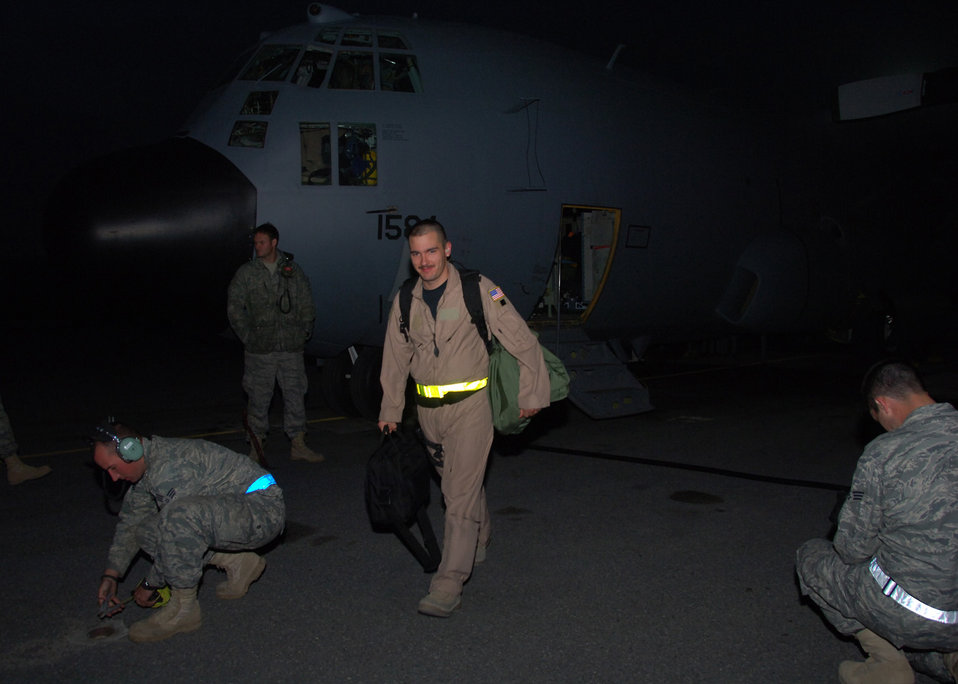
43rd EECS passes 20,000 combat hours

Tech. Sgt. Michael Cadette, an EC-130 Compass Call mission crew supervisor, heads to base ops at an air base in Southwest Asia, after a mission Feb. 17. Aircrews with the 43rd Expeditionary Electronic Combat Squadron flying the EC-130s have provided communications jamming support to U.S. and coalition ground forces for an accumulated 20,000 combat flight hours.